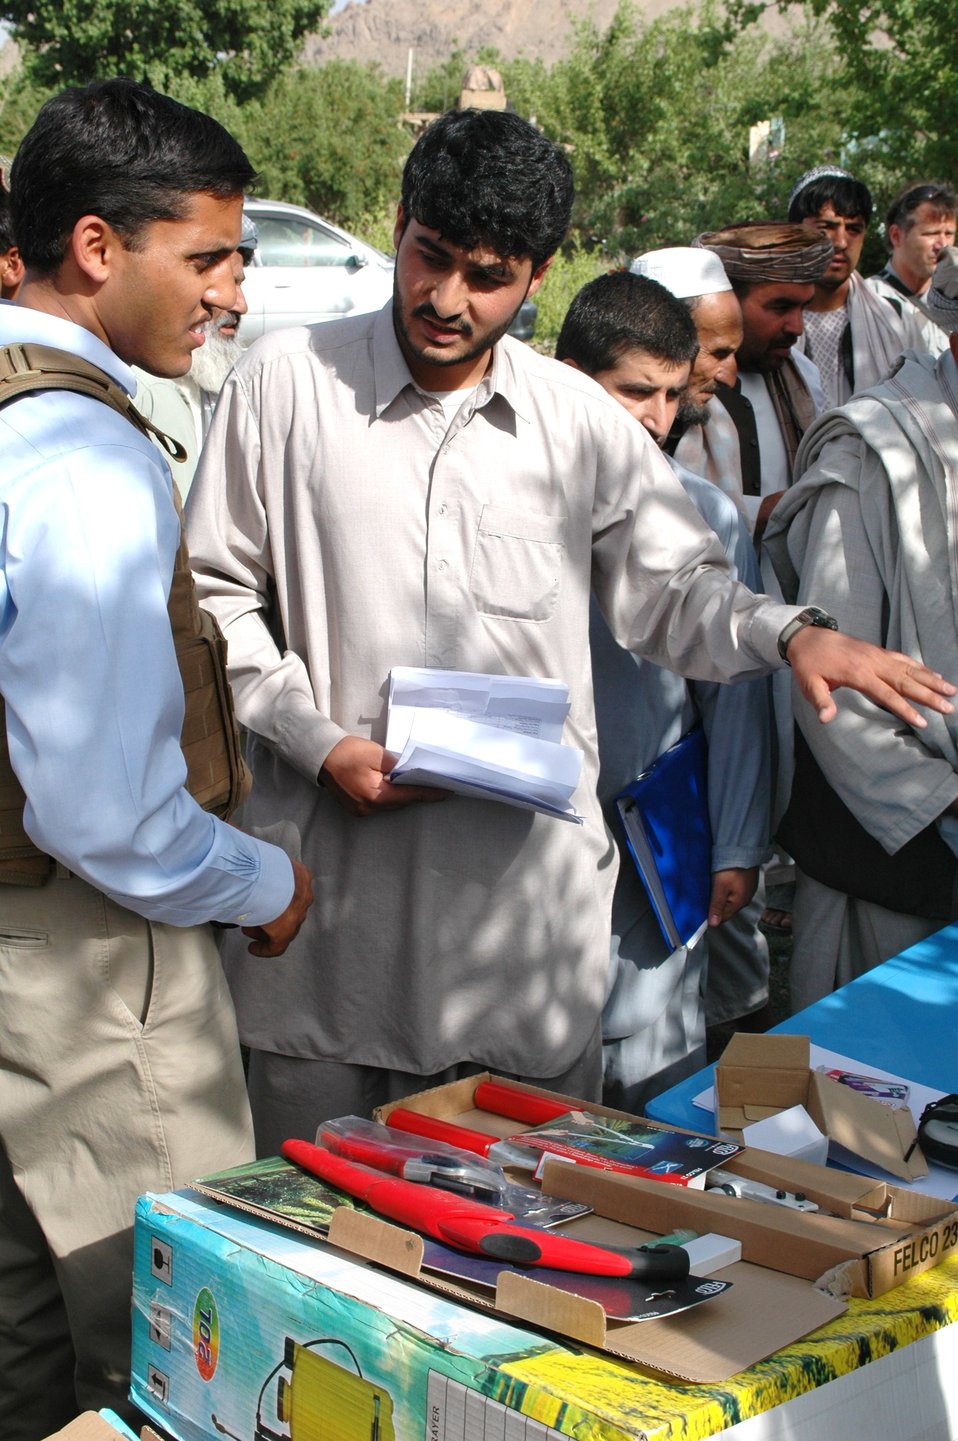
Dr Shah Visits Argandab April 10, 2010